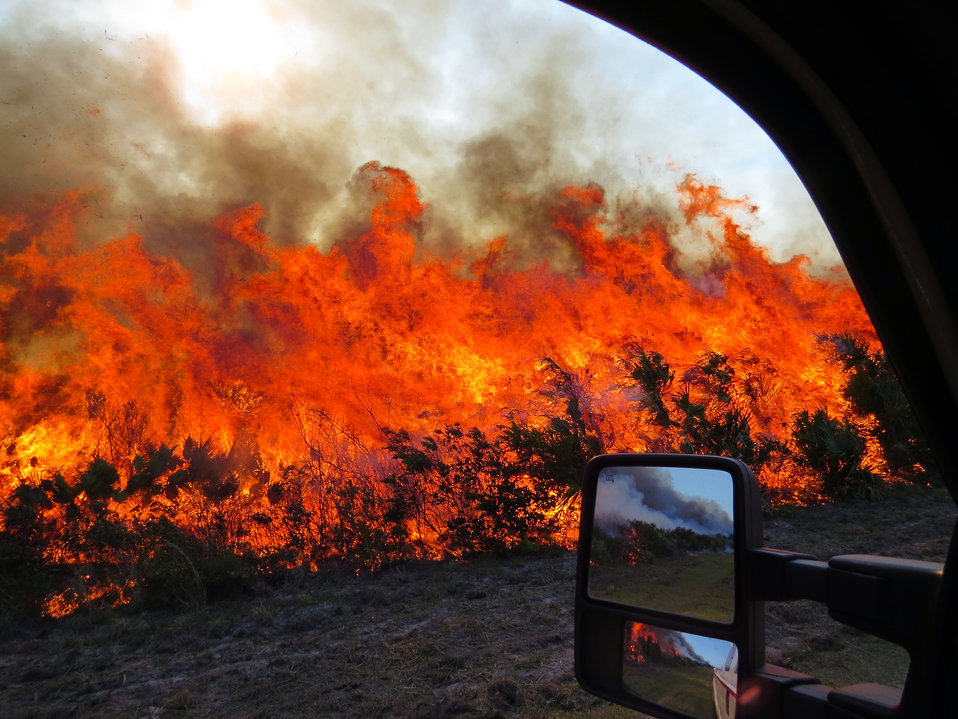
Merritt Island RX Fire Unit 4.2 03/08/14

USFWS firefighters conduct a prescribed fire at Merritt Island NWR just east of the refuge office south of the Max Brewer Parkway and west of the NASA Shuttle Landing Facility.